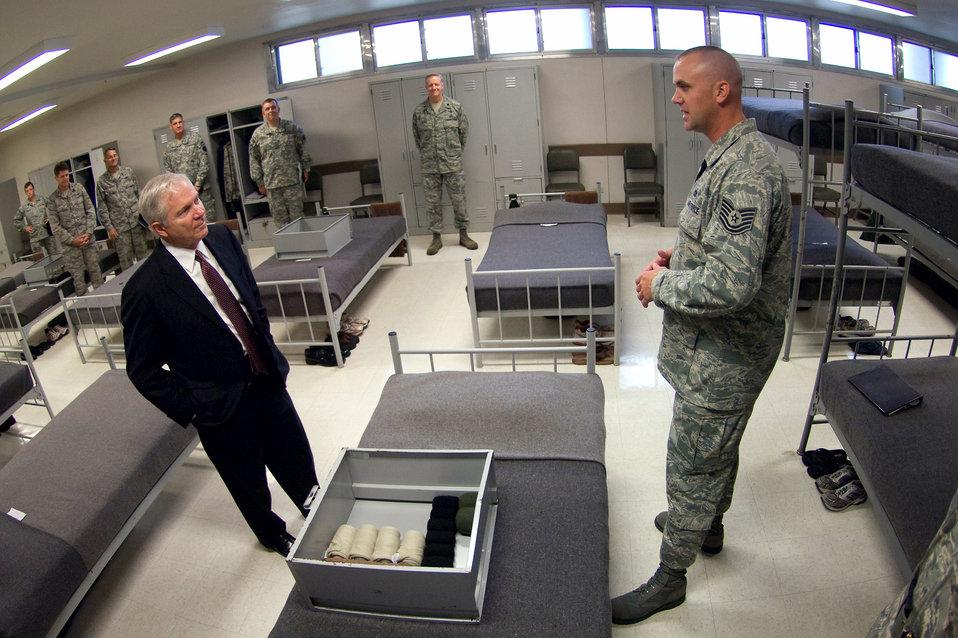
Secretary Gates visit

Secretary of Defense Robert M. Gates receives a tour of a basic military taining dormitory during a visit July 24 to Lackland Air Force Base,Texas.